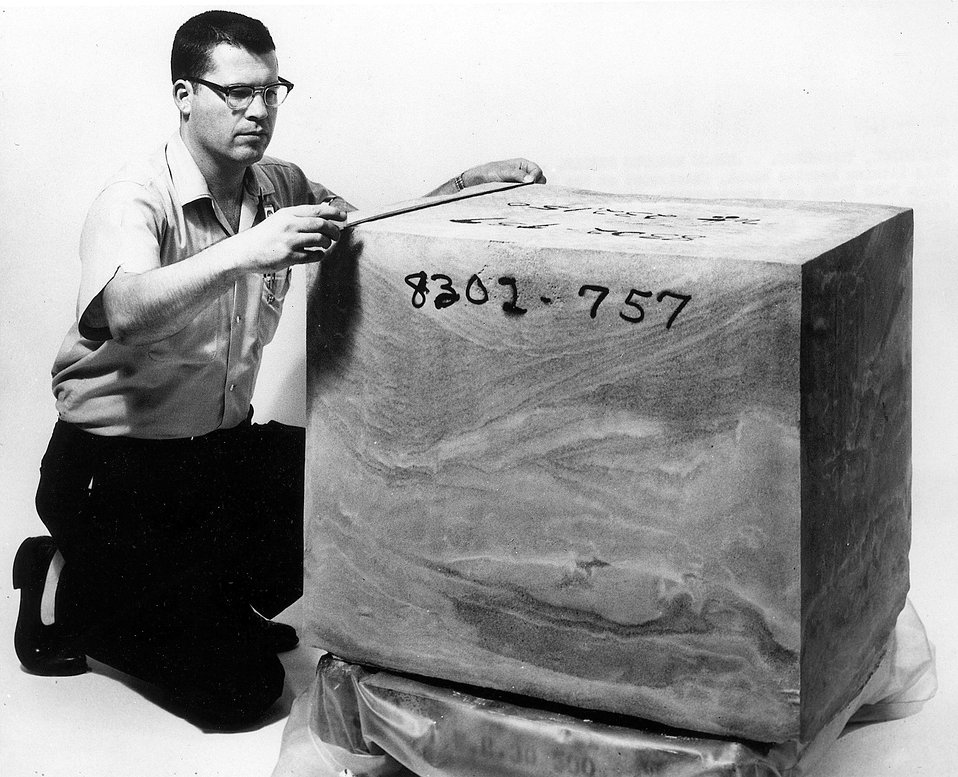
OAK RIDGE, TENNESSEE...SPACE REACTOR SHIELD...This lithium hydride block, fabricated at the Oak Ridge Y-12 Plant as a space-reactor radiation shield, was isostatically pressed at 30,000 pounds per square inch. Circa 1966.